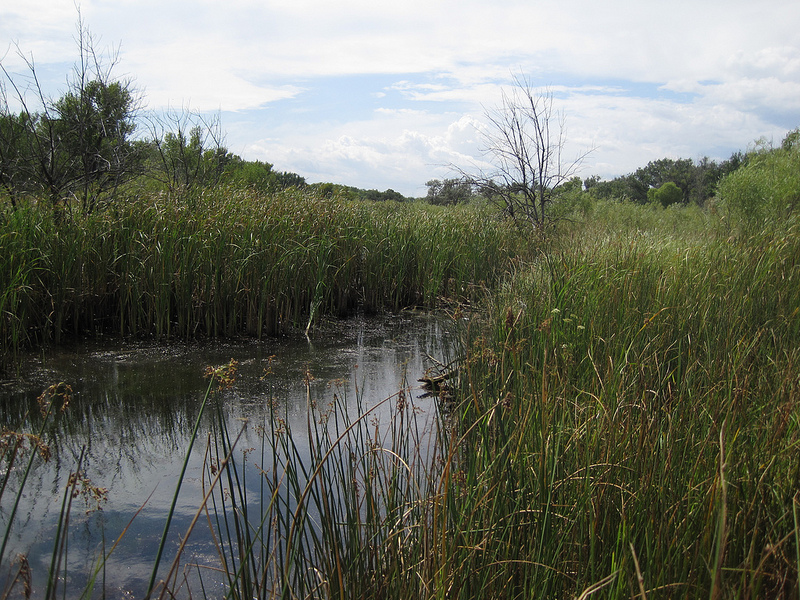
Platte River Slough

This picture was taken on August 26, 2009 while surveying for the Platte River caddisfly.

Location: The Nature Conservancy's Sutherland Tract, Sutherland, NE

Credit: Lindsay Vivian / USFWS

Photo Contest Entry #47